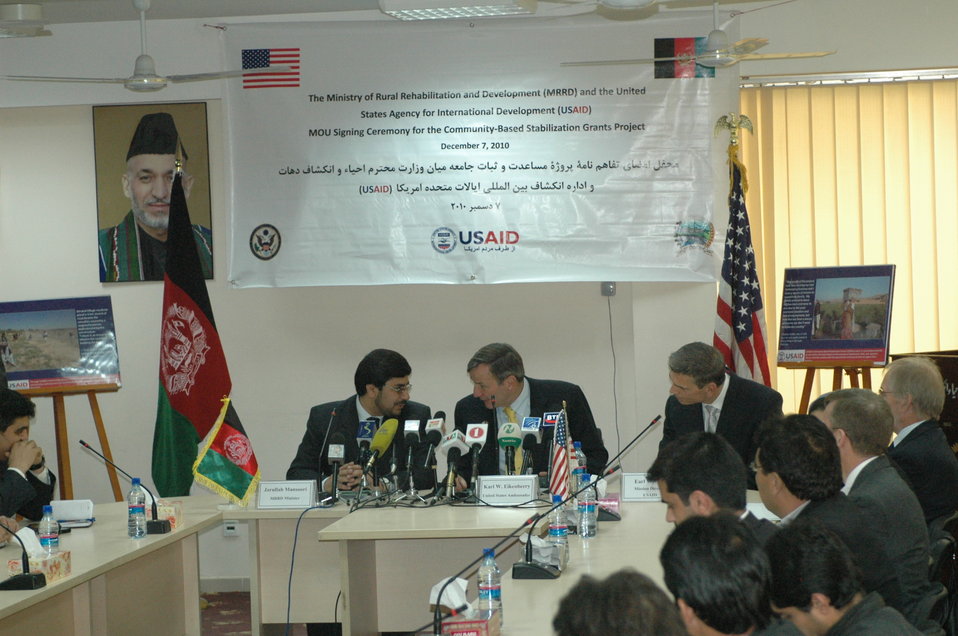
Community Based Stabilization Grants Ceremony, December 7, 2010